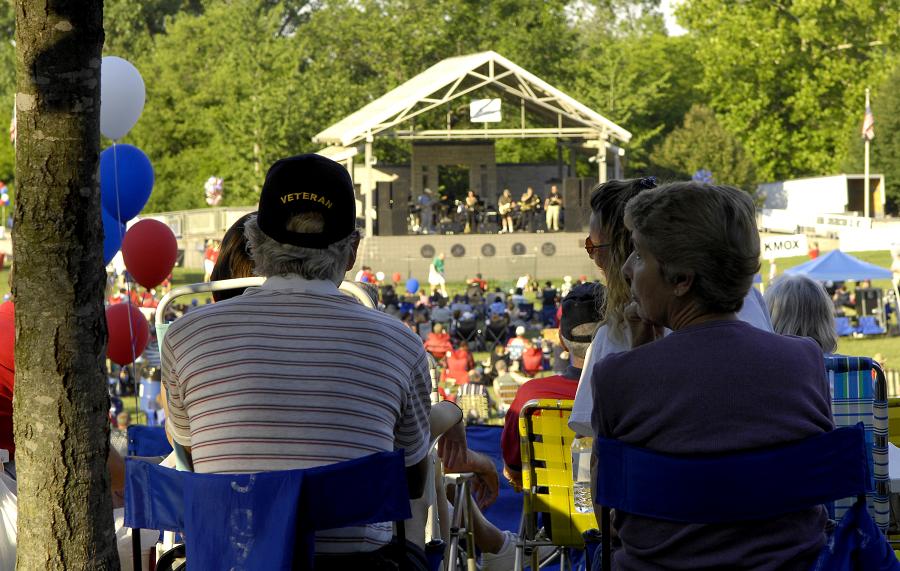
Air Force Week St. Louis

Many retired veternas came out to see the Air Force perform at the Jefferson Barracks Blast, July 3, 2007. St. Louis County, in partnership with the Air Force during Air Force Week, put on the blast, entertaining the more than 20,000 in attendance.